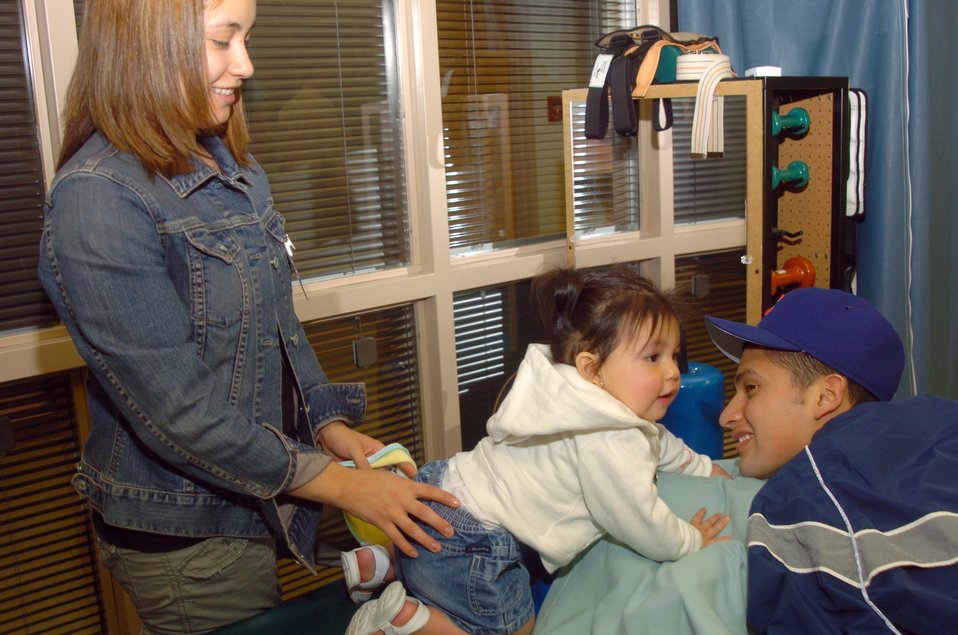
Airman wants to continue to serve

Senior Airman Dan Acosta's wife, Sandy, and daughter, Sophia, help ease some of his discomfort during a therapy session Thursday, Feb. 23, 2006, in the family-friendly burn rehabilitation center at Brooke Army Medical Center in San Antonio.